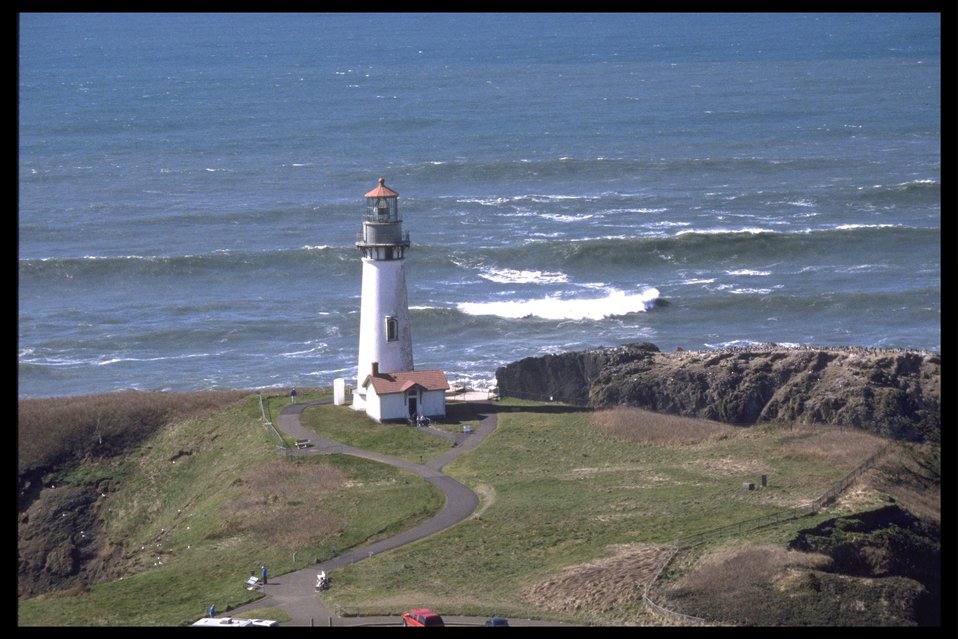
Yaquina Head Lighthouse.